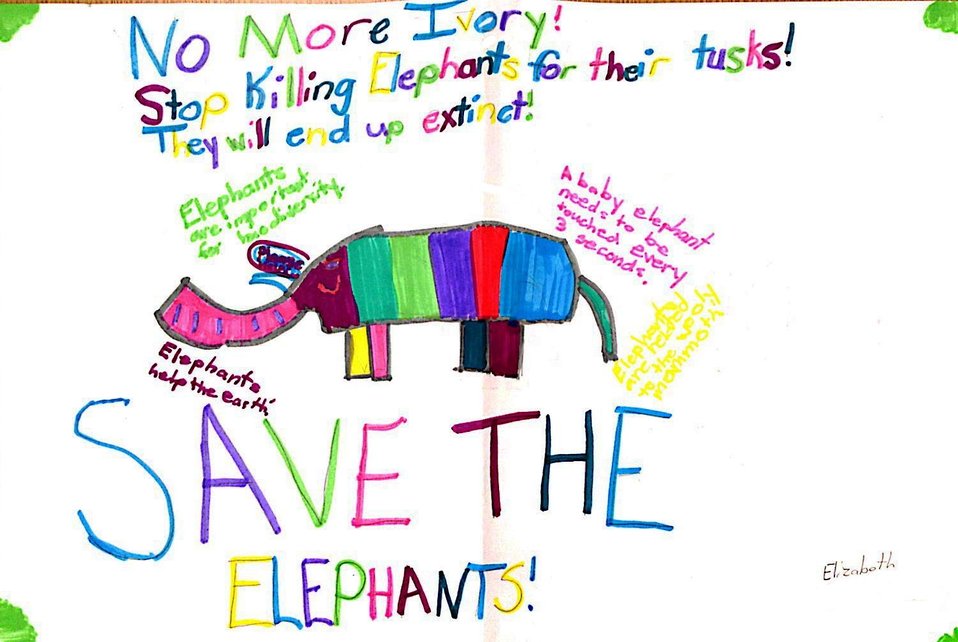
Drawing by Elizabeth